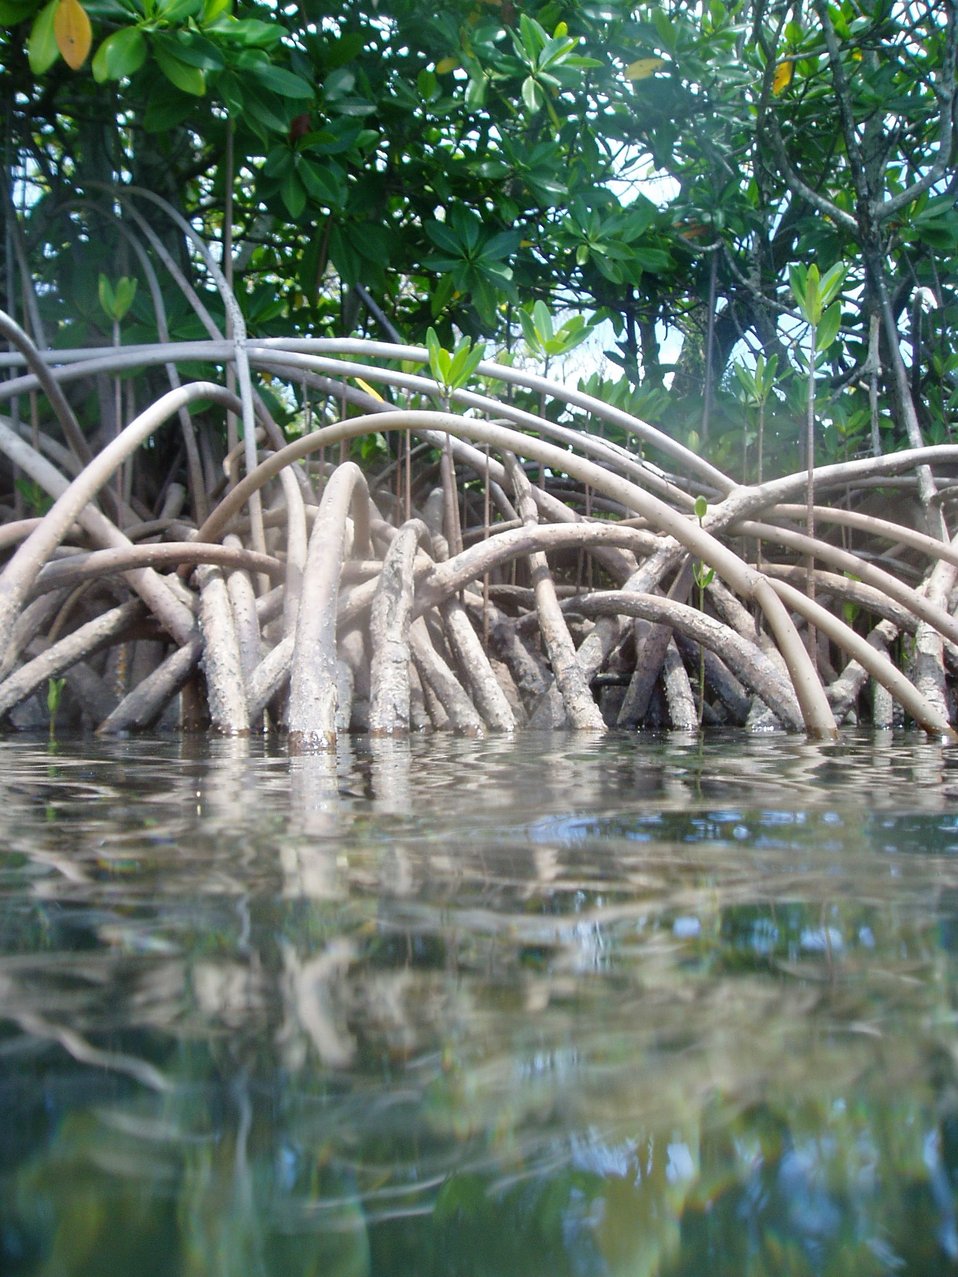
Magrove roots provide habitat for numerous marine animals.